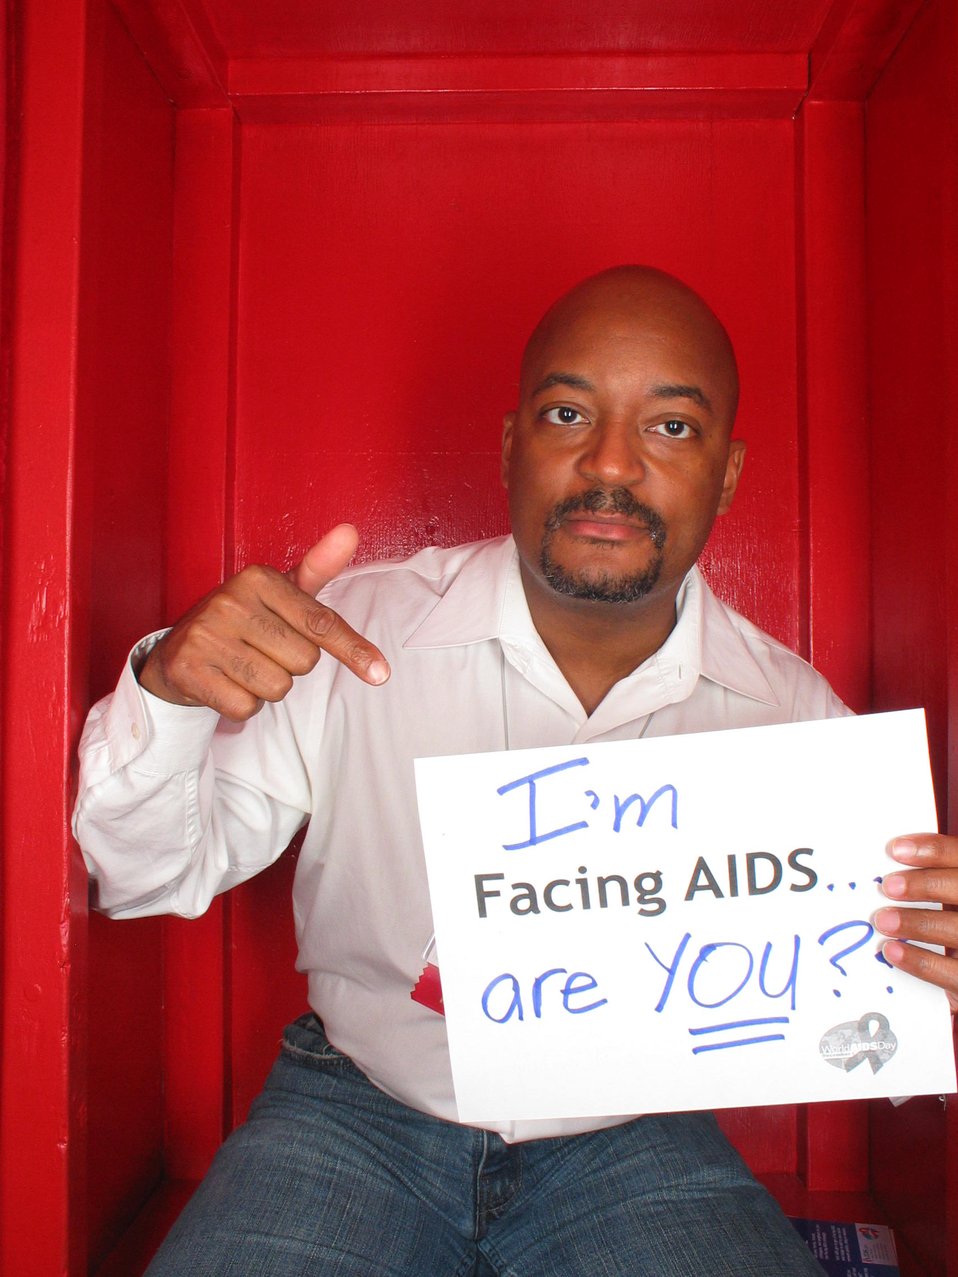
I'm Facing AIDS are you?